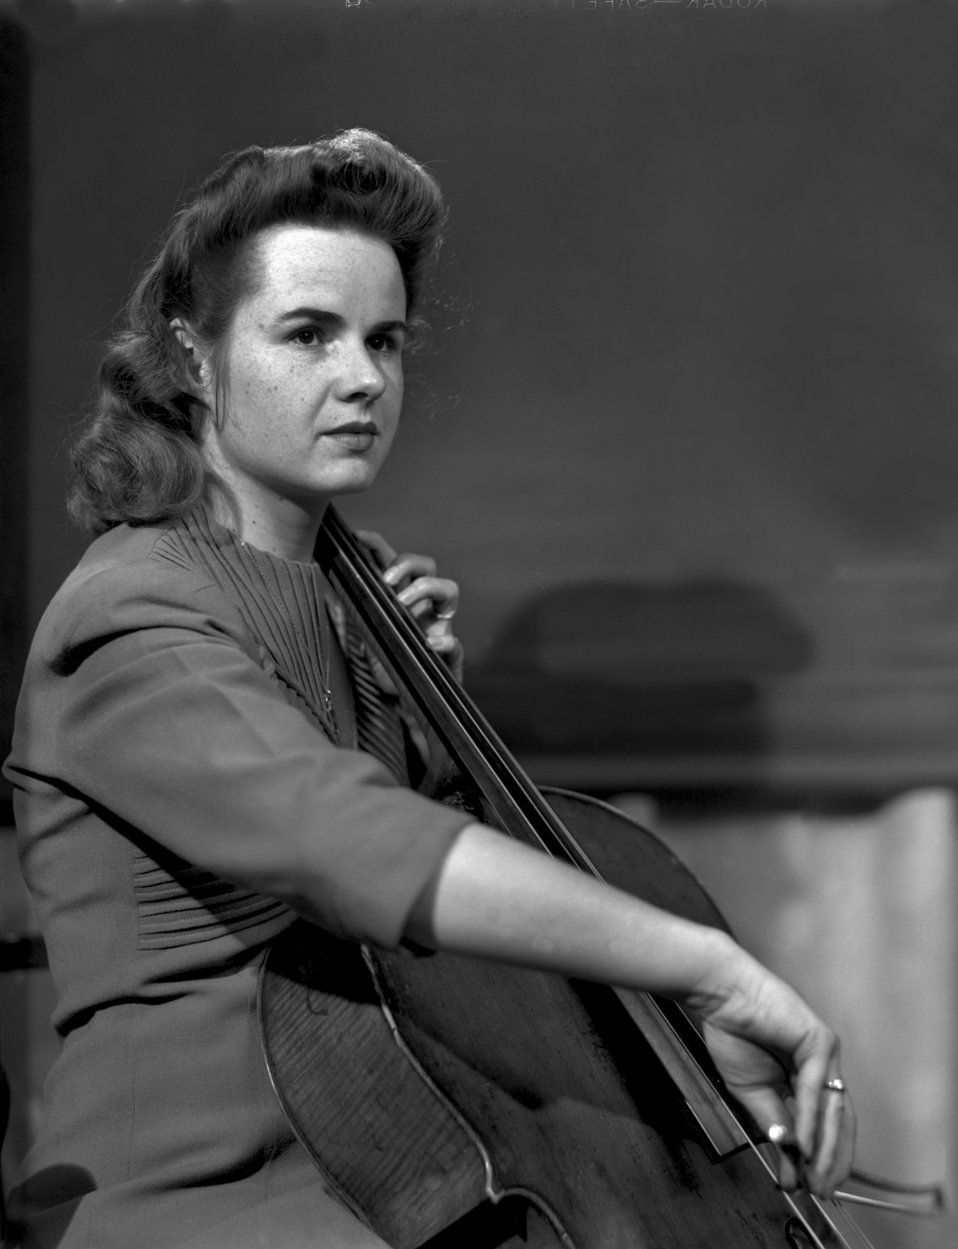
Mary Elizabeth Burris Oak Ridge Symphony

3240-2 DOE photo Ed Westcott Oak Ridge Tennessee 1-15-1947